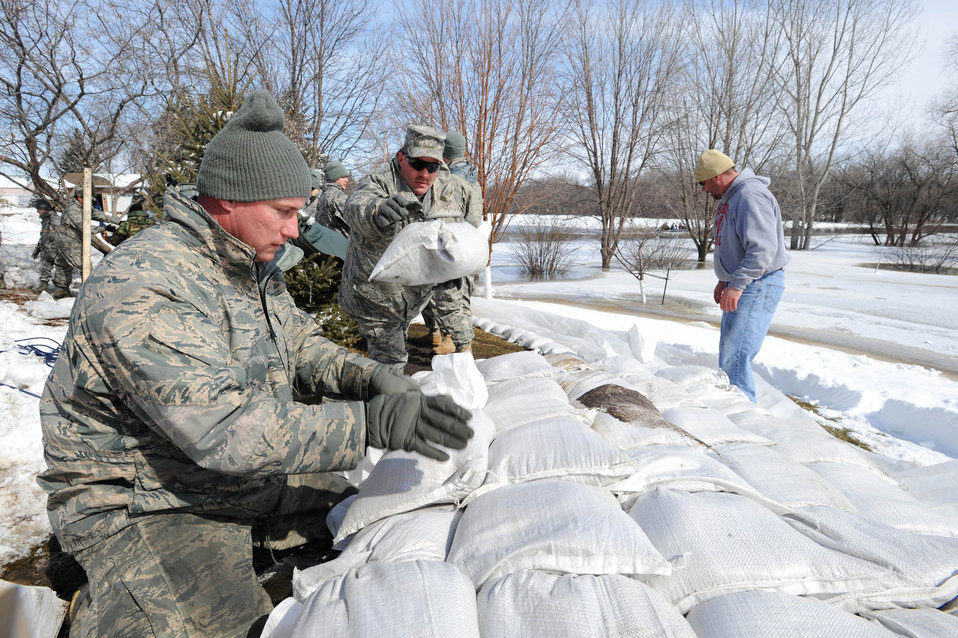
Grand Forks Airmen donate 12,000-plus volunteer hours, earn presidential award

Tech. Sgt. Jon Shumard hands a sandbag to the next position while Tech. Sgt. Kevin Schettler laps the sandbag in place along the Red River March 28, 2009, in south Grand Forks, N.D. He and other Airmen stacked sandbags to increase the dike to a height of 54 feet to mitigate flood damage.